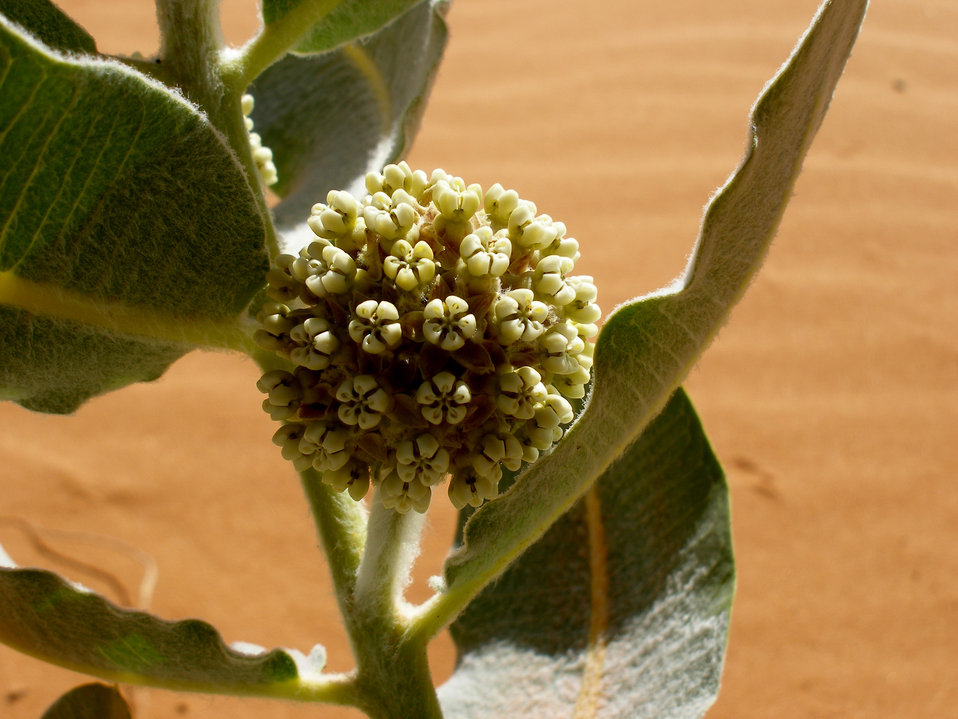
Welsh milkweed (Asclepias welshii)

This species is restricted to active sand dunes derived from Navajo Sandstone in sagebrush, juniper and Ponderosa pine communities between 5,000 and 6,230 ft. in elevation. It is endemic to Kane County, UT, and Coconino, Navajo & Apache counties, AZ. The Welsh milkweed is listed threatened.